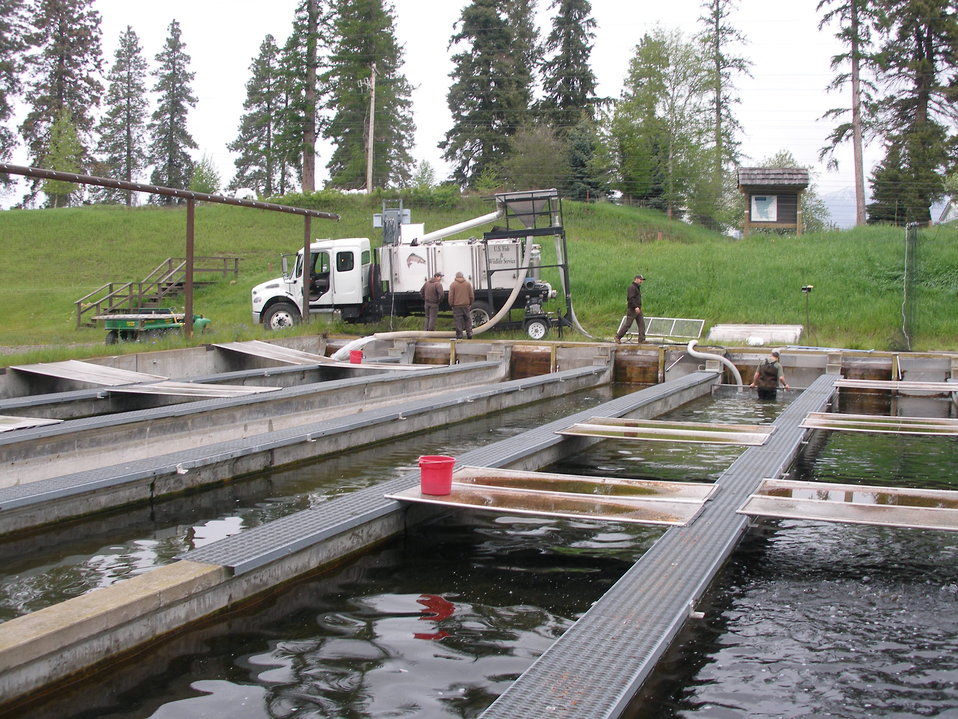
Loading Fish into Distribution Truck

Creston National Fish Hatchery staff use a fish pump to load rainbow trout into a distribution truck. Approximately 5,000 fish were taken to the Blackfoot Reservation in Montana for stocking.